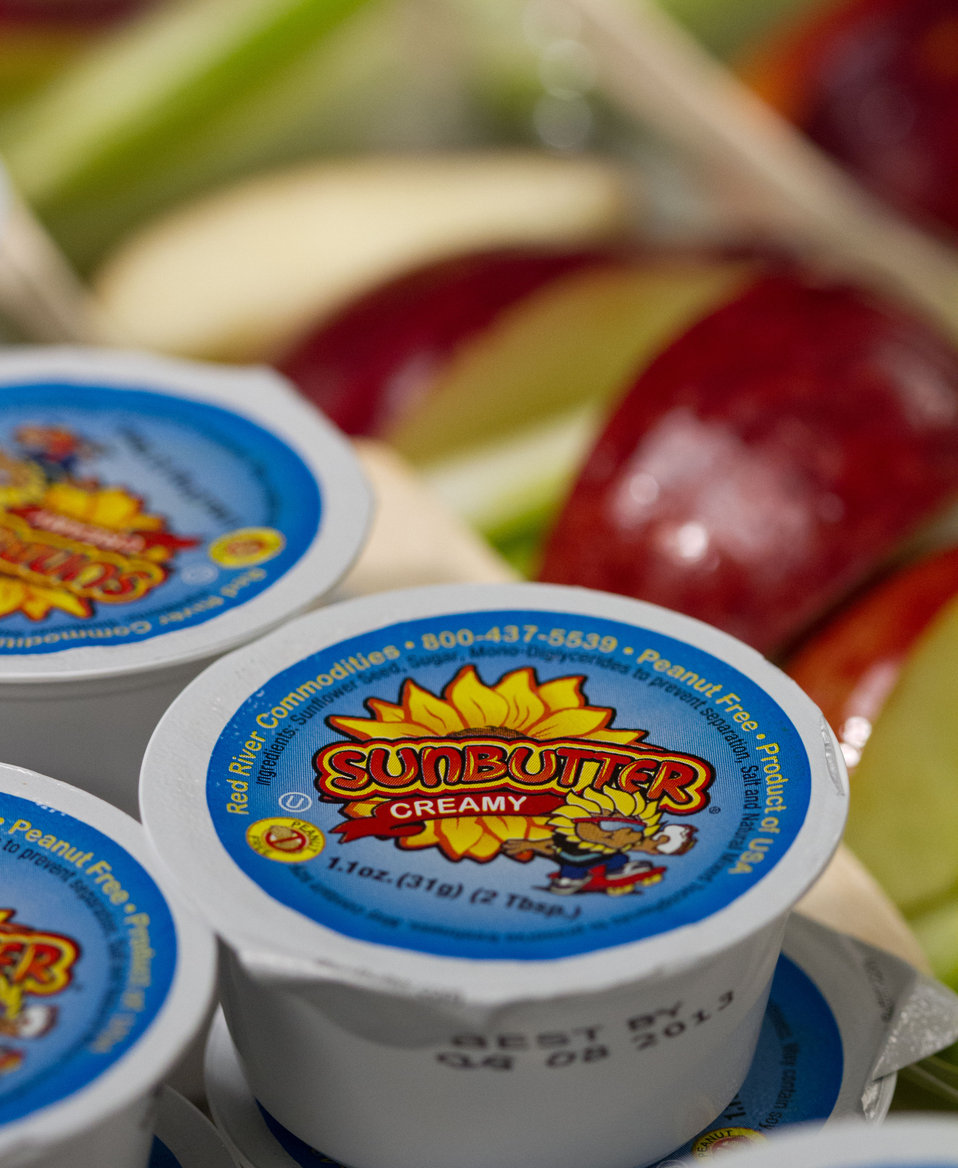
Apple and celery cup with sunbutter dip is an important new menu item that substituted peanut butter with a sunflower seed-based spread, and was sampled by more than 50 students from the 5th grade classes at Yorkshire Elementary School in Manassas, VA., during a taste testing of the new school lunch menu created to meet the new standards. Students tested a sample menu of black-bean filled pizza, pineapple spear, and sunny broccoli and cauliflower toss, on Wednesday, September 5, 2012.